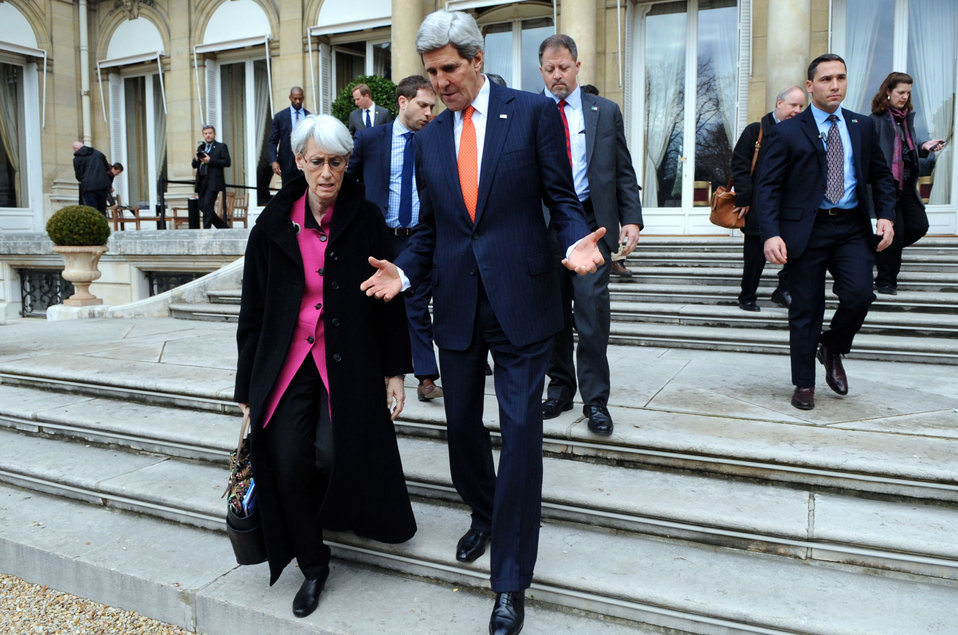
Secretary Kerry Confers With Under Secretary Sherman After Paris Talks

U.S. Secretary of State John Kerry speaks with Under Secretary of State for Political Affairs Wendy Sherman following a round of meetings in Paris, France, on January 13, 2014.